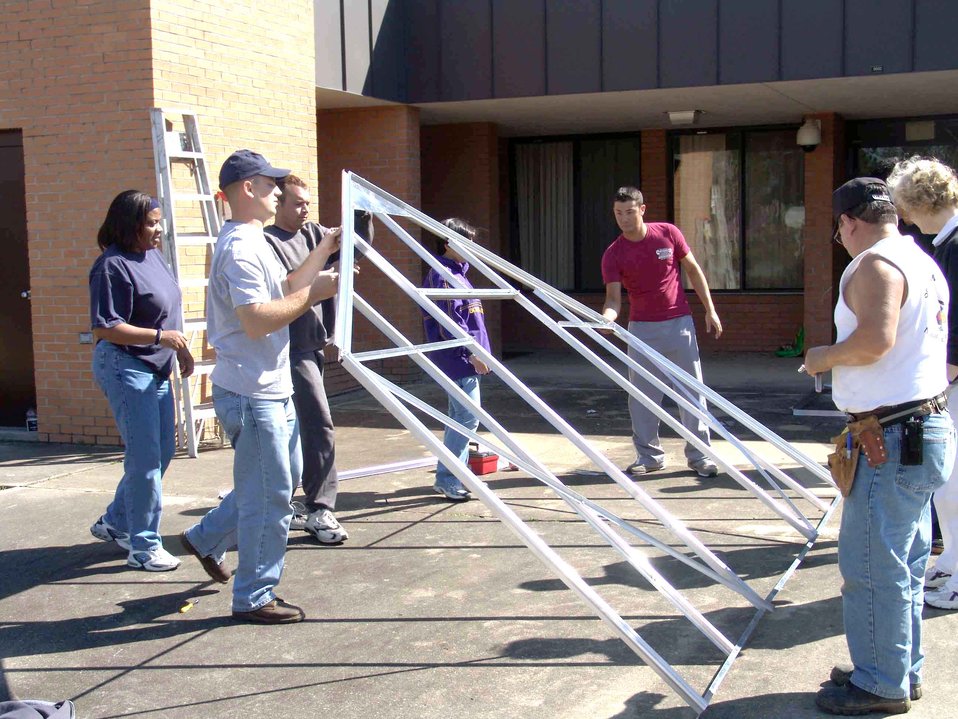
Airmen help local school rebuild greenhouse

VALPARAISO, Fla. -- Volunteers lift one end of a greenhouse into place at an elementary school here. About 15 Airmen from nearby Eglin Air Force Base and Duke Field volunteered to help rebuild the school's greenhouse which was destroyed by Hurricane Ivan in September.